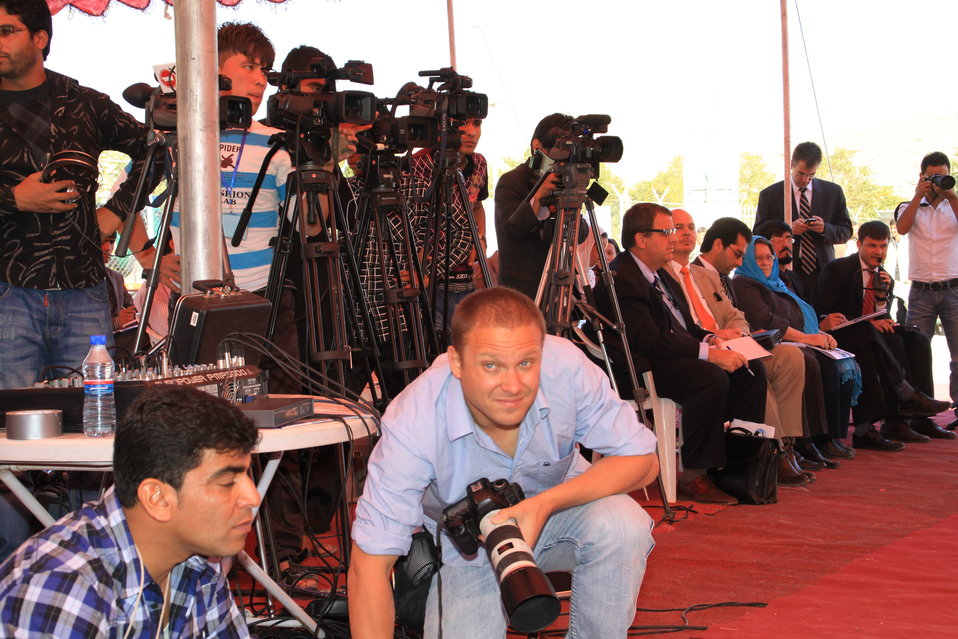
AVIPA Plus Wheat Seed Distribution 101005

US Ambassador Karl Eikenberry and USAID Acting Mission Director Kevin Brownawell joined the Minister of Agriculture, Irrigation and Livestock, H.E. Minister Mohammed Rahimi in signing a Memorandum of Understanding and distributing vouchers to area farmers for wheat and fertilizer.

US Ambassador Karl Eikenberry and USAID Acting Mission Director Kevin Brownawell joined the Minister of Agriculture, Irrigation and Livestock, H.E. Minister Mohammed Rahimi in signing a Memorandum of Understanding and distributing vouchers to area farmers for wheat and fertilizer.